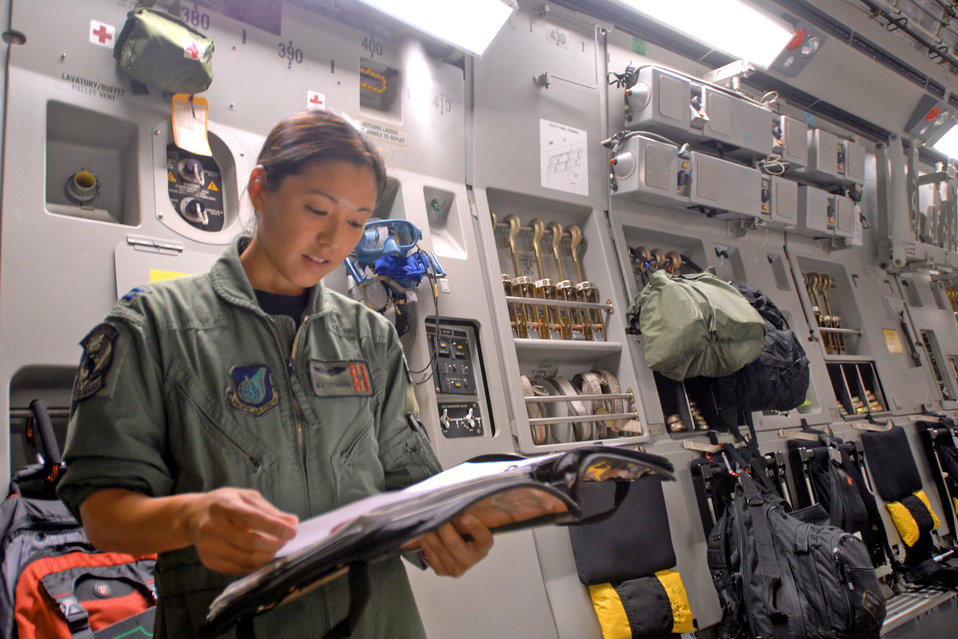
Humanitarian aid bound for tsunami relief effort

Capt. B.J. Itoman goes over paperwork as humanitarian aid supplies from the Federal Emergency Management Agency is loaded by Hawaii Air National Guard, Hawaii National Guard and Hickam Air Force Base active-duty Airmen into a C-17 Globemaster III bound for American Samoa to assist in the relief efforts under way Sept. 30, 2009, at Hickam AFB, Hawaii. The efforts are in the wake of tsunamis triggered by an undersea earthquake Sept. 29 that has left more than 140 people dead in the South Pacific region. More than 90 Airmen and Soldiers deployed from Hawaii for the humanitarian mission. Captain Itoman is a a Hawaii Air National Guard C-17 pilot.